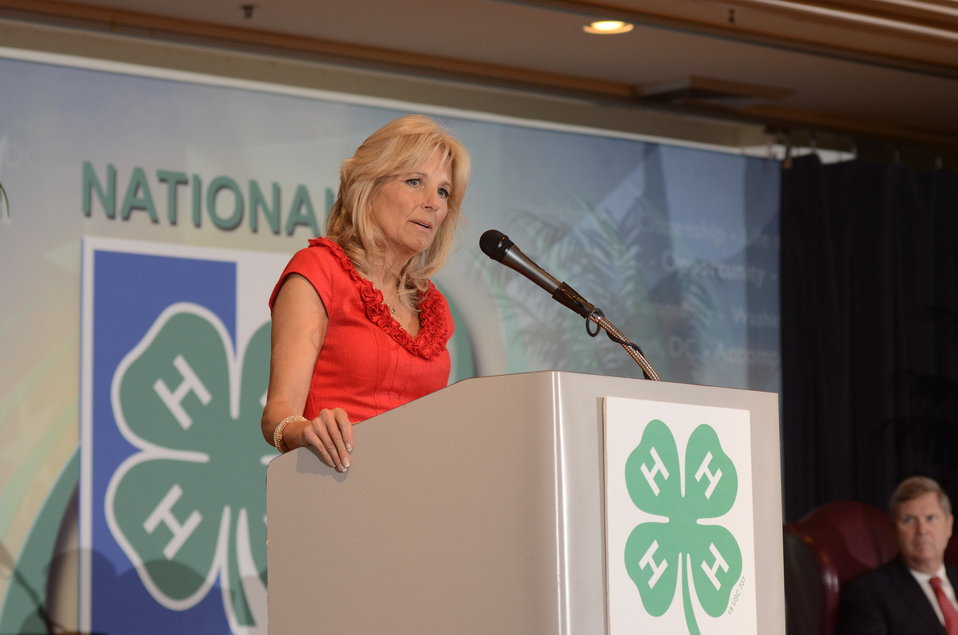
Dr. Jill Biden speaks about “Joining Forces,” the initiative started with First Lady Michelle Obama to encourage all Americans to support military families at the National 4-H Conference, in Chevy Chase. MD, on Monday, March 25, 2012. Joining Forces is a comprehensive national initiative to mobilize all sectors of society to give our service members and their families the opportunities and support they have earned.